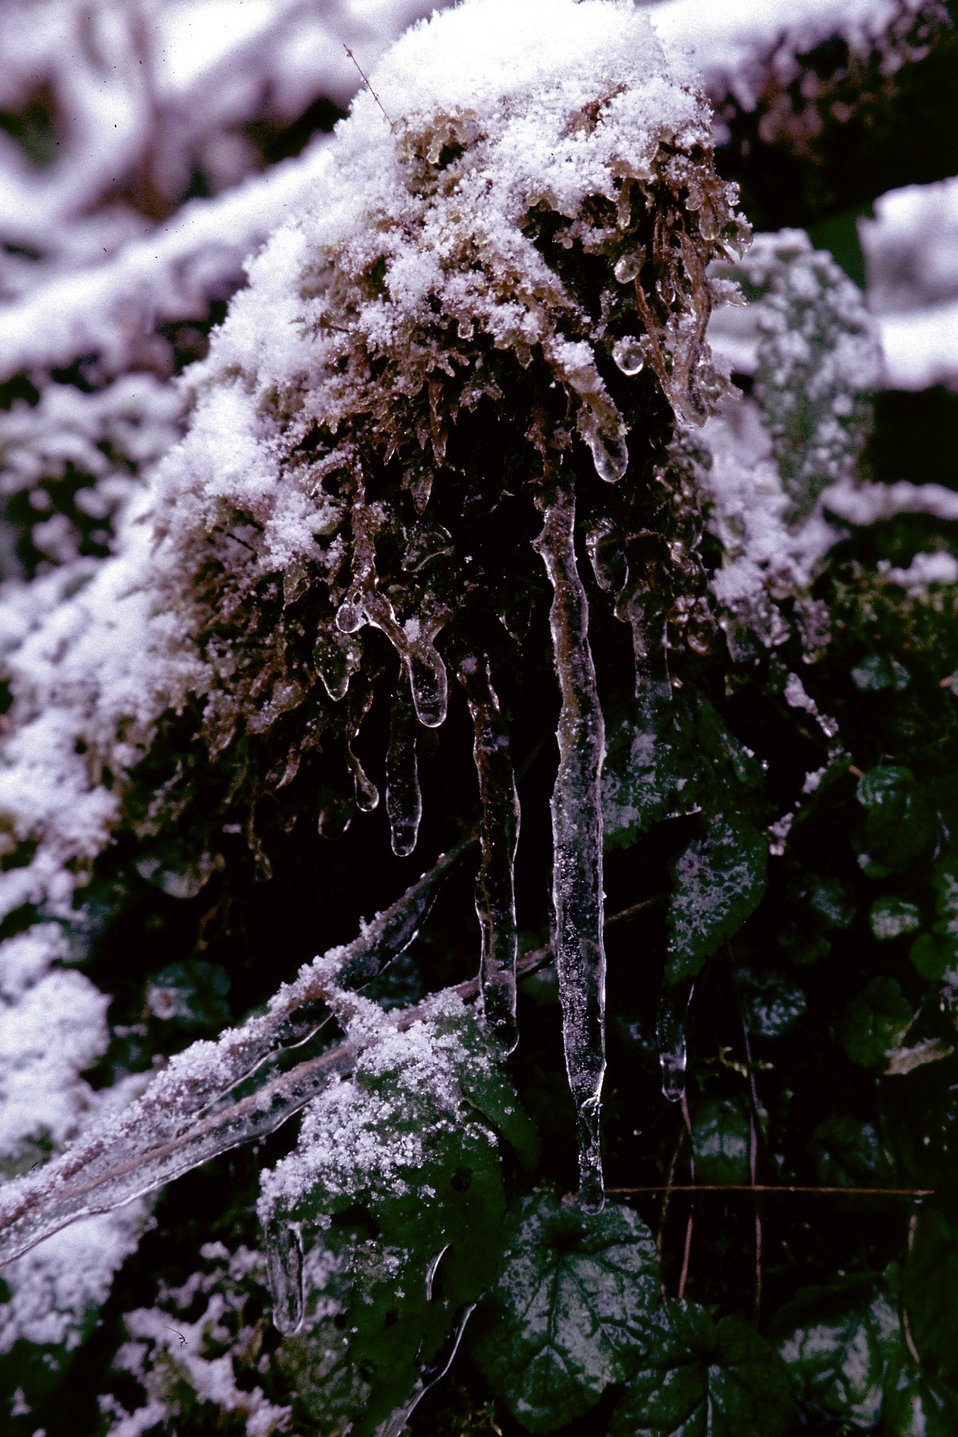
Mid Winter forest scene in the Mollala Corridor.